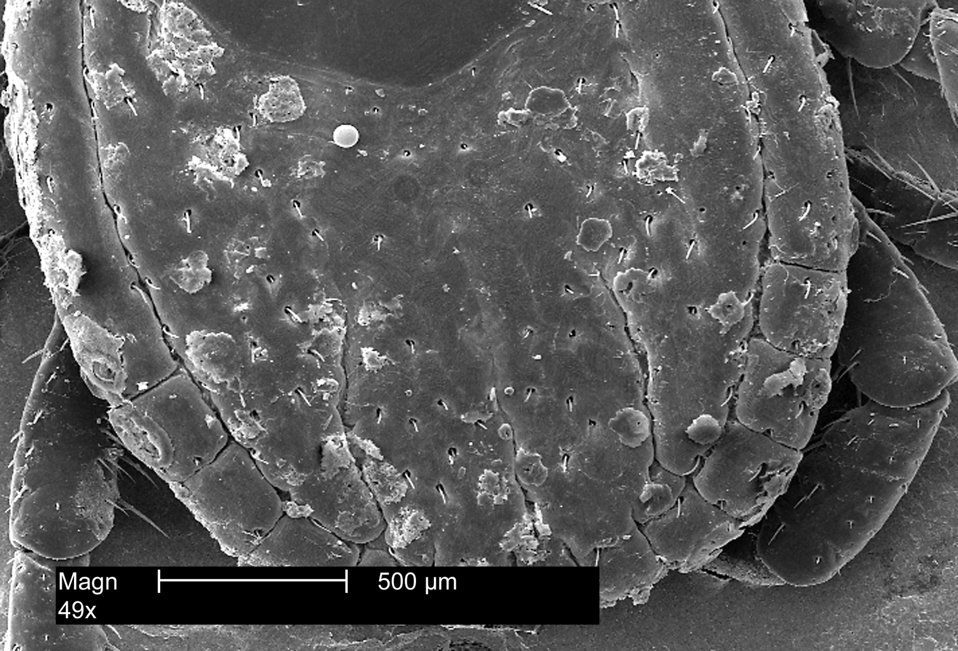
Dorsal view of the back of an American Dog Tick, Dermacentor variabilis, magnified 49x.